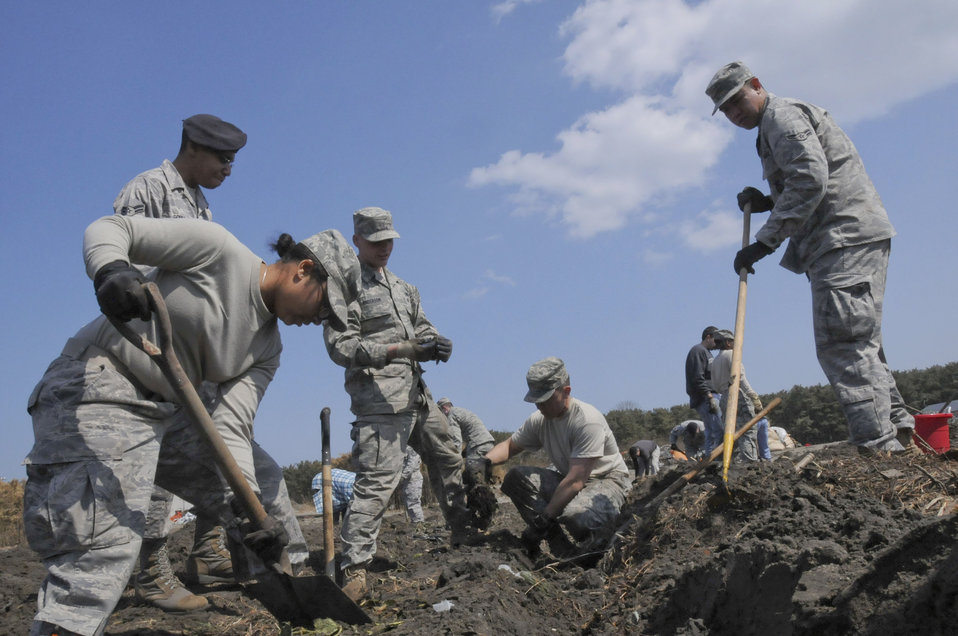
Volunteer Work Continues Outside Misawa Air Base

Airmen uncover rows of strawberries April 1, 2011 at a farm near Misawa Air Base, Japan. A tsunami, triggered by the March 11 earthquake, flooded this coastal area where base volunteers spent the week cleaning up local farms.